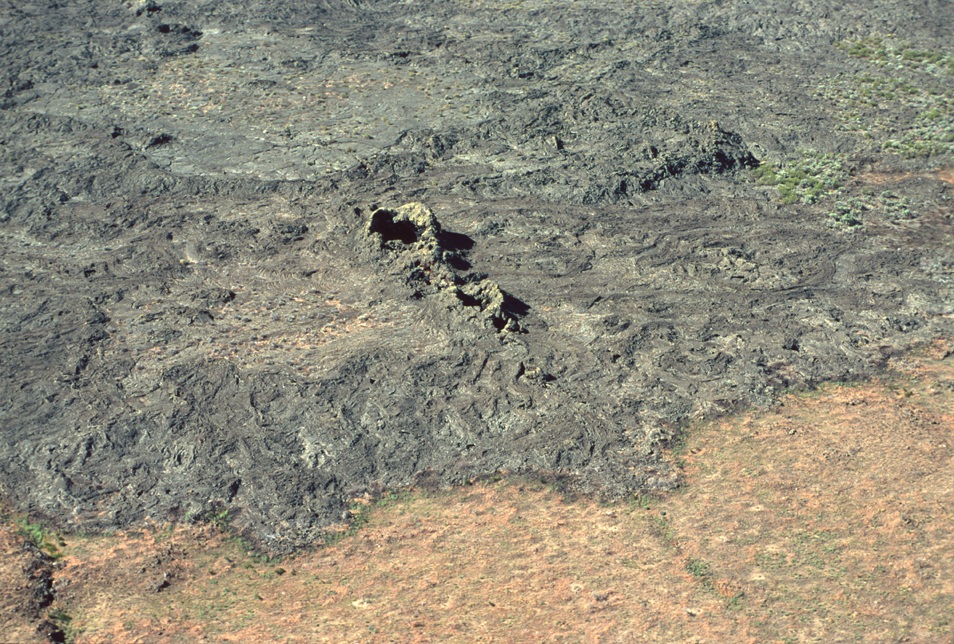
Shoshone Field Office USRD Upper Snake River District